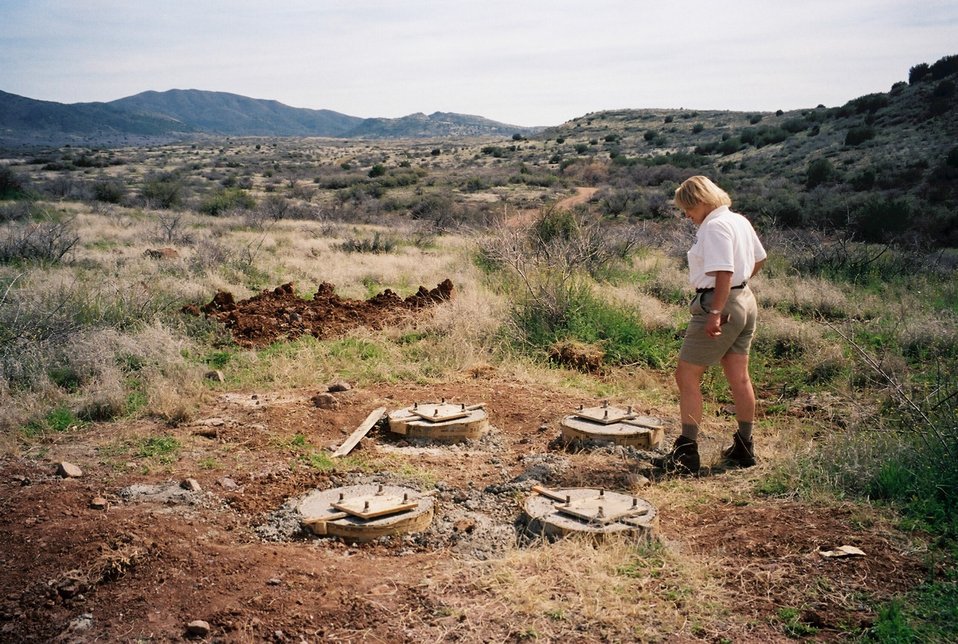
A BLM employee examines part of the Agua Fria National Monument.